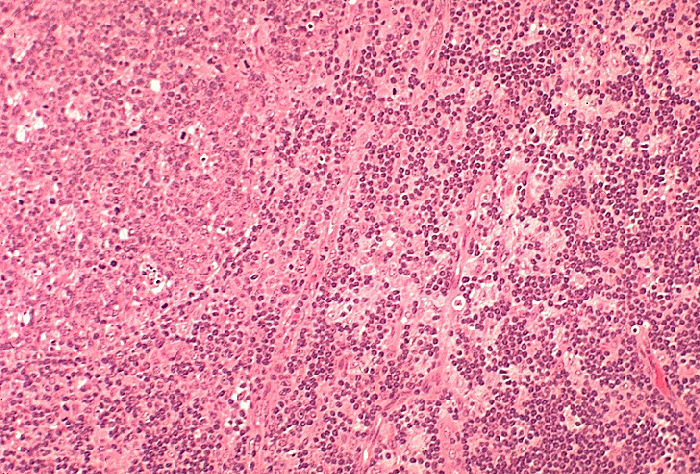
Histopathology of lymphadenopathy due to HIV-1 infection.